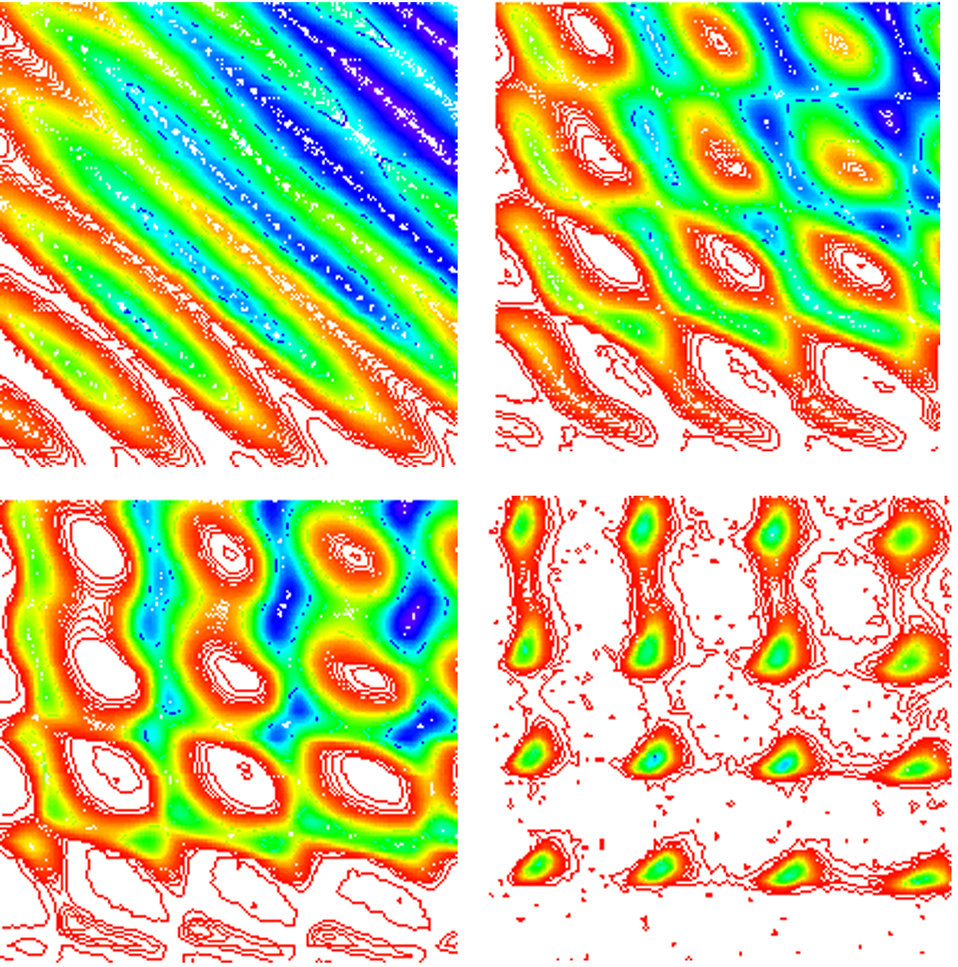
New Design for Transistors Powered by Single Electrons

The colorized images show how tuning the voltage of the three gates controls very small amounts of electrical charge and regulates current flow in the new silicon transistor. In the first figure, the pattern of diagonal lines indicates the charge is correlated throughout the device, and current is flowing (at levels ranging from 0 Amps shown in red, to 1.4 nanoAmps shown in violet). The next three figures show what happens as the voltage applied to the center gate is reduced. In the last figure, the square pattern indicates the charge has separated in the device, and the large amount of white space indicates a related drop off in the current.